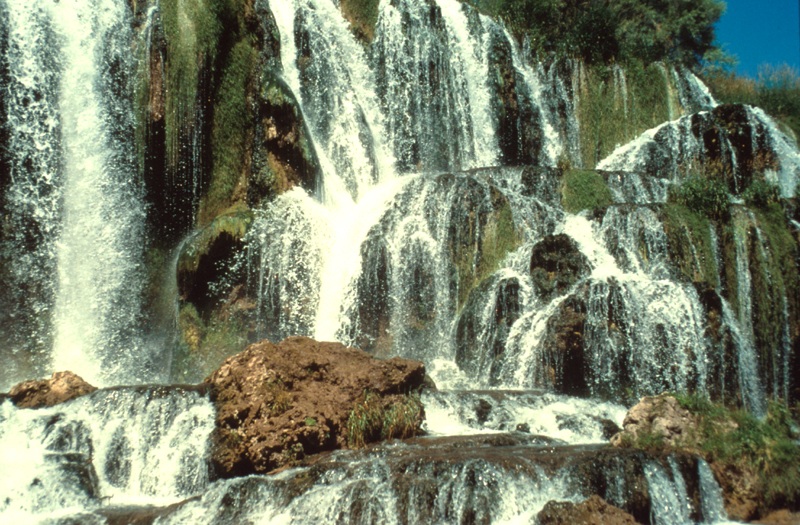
Fall Creek Falls Snake River Canyon